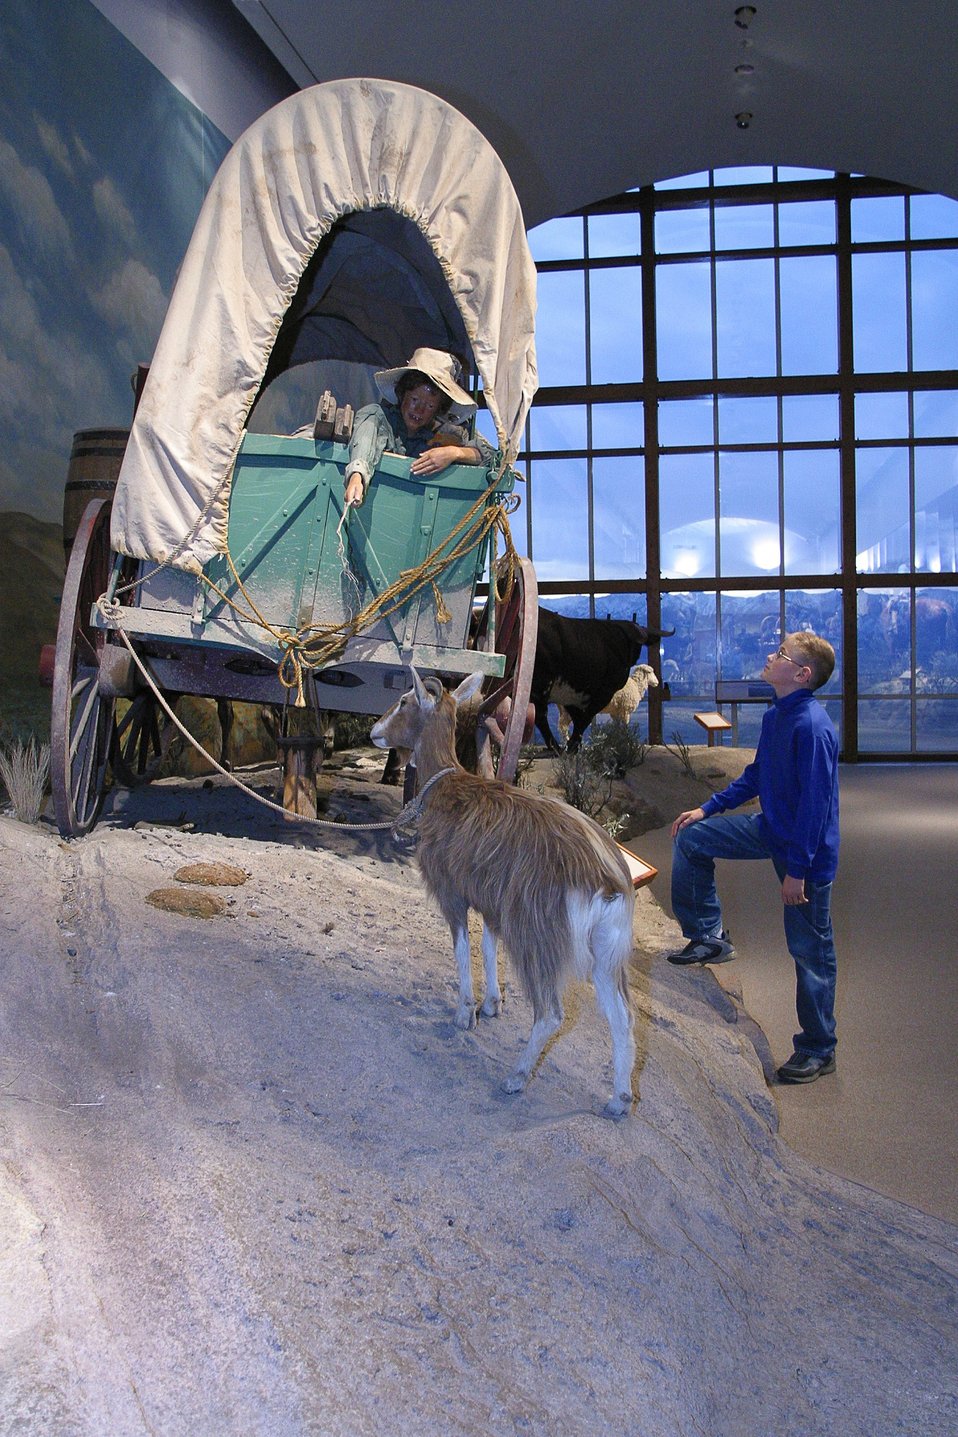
The main Gallery at the National Historic Oregon Trail Enterpretive Center depicts life size scenes along the Oregon Trail.